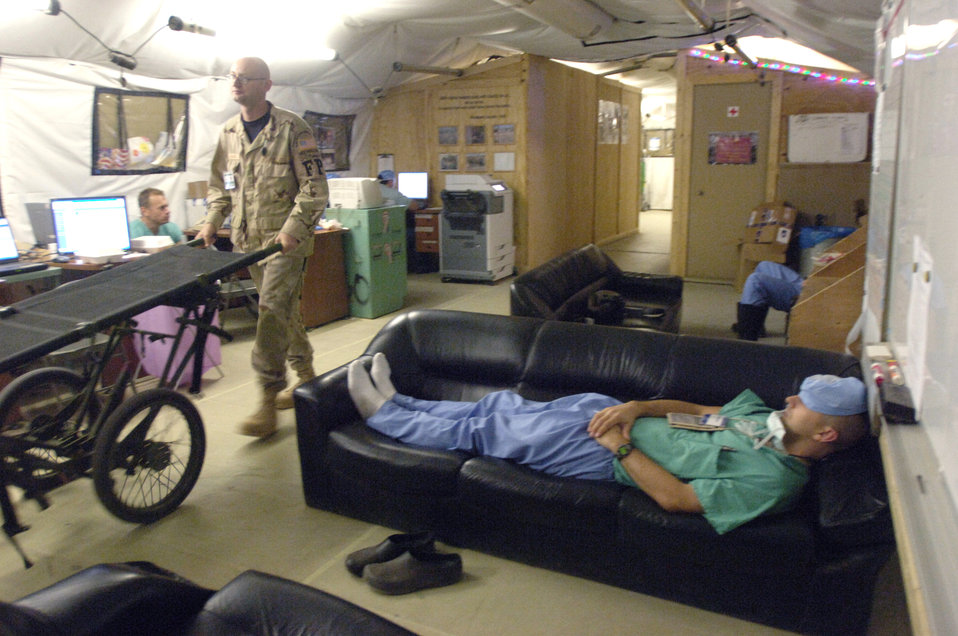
It's been a long day

Maj. Dennis Zagrodnik catches a few winks between surgeries Oct. 5 in the Air Force Theatre Hospital at Balad Air Base, Iraq. The surgeon is deployed from Wright-Patterson Air Force Base, Ohio.